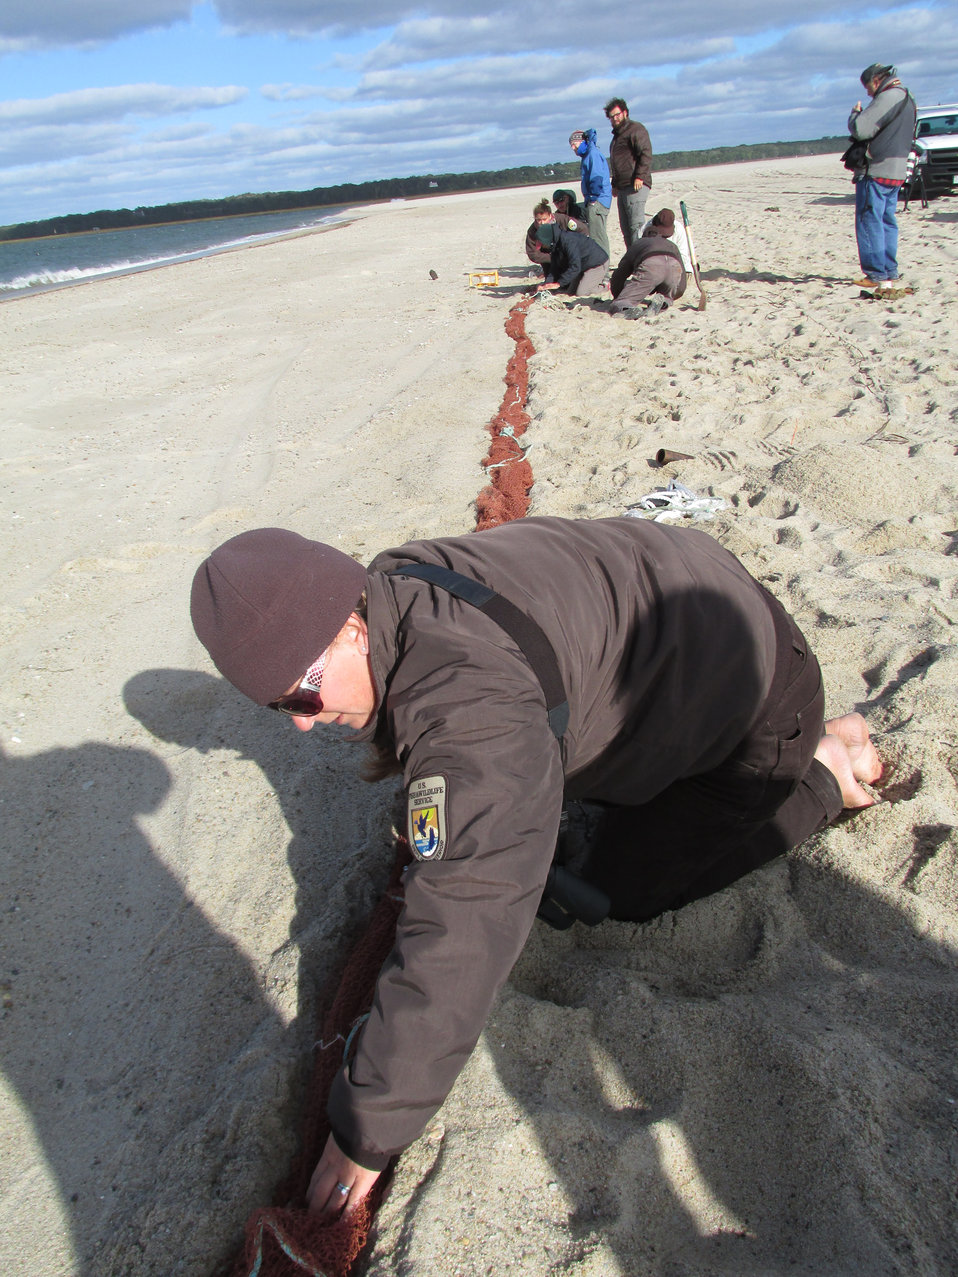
Cedit: USFWS